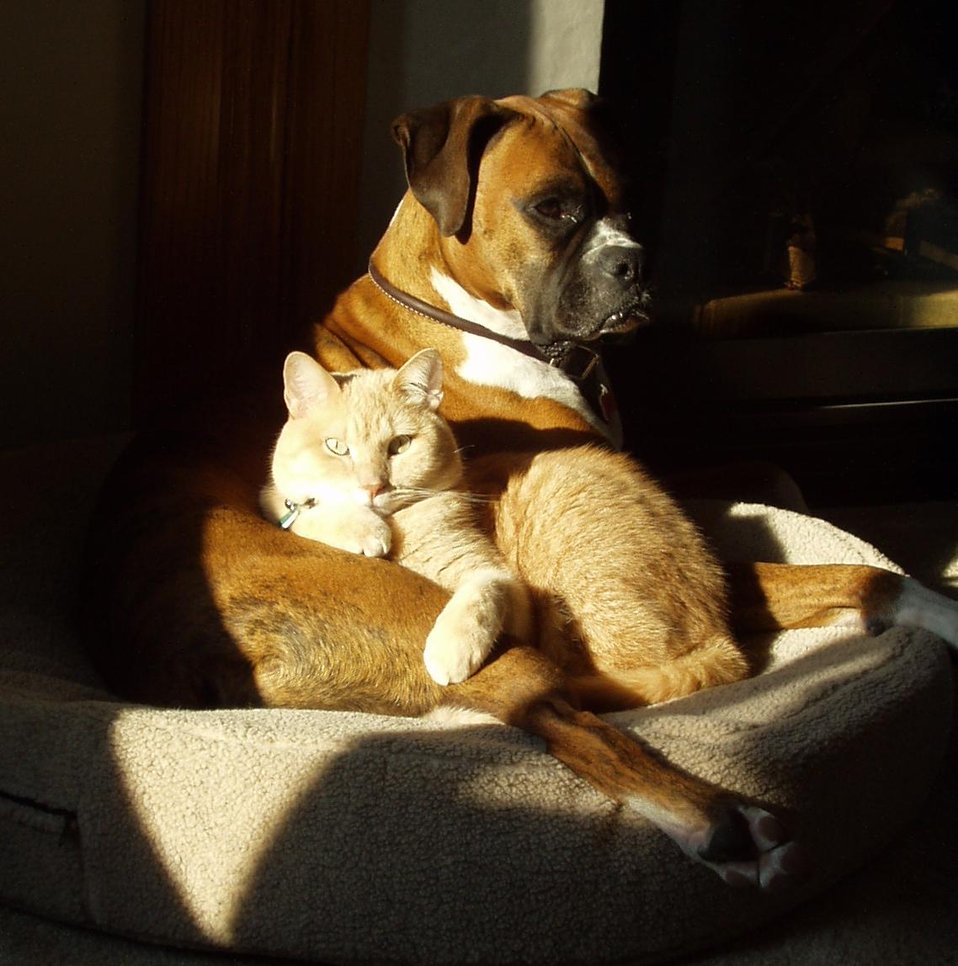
A 5-year-old (light) brindle female coexisting peacefully with house cat.